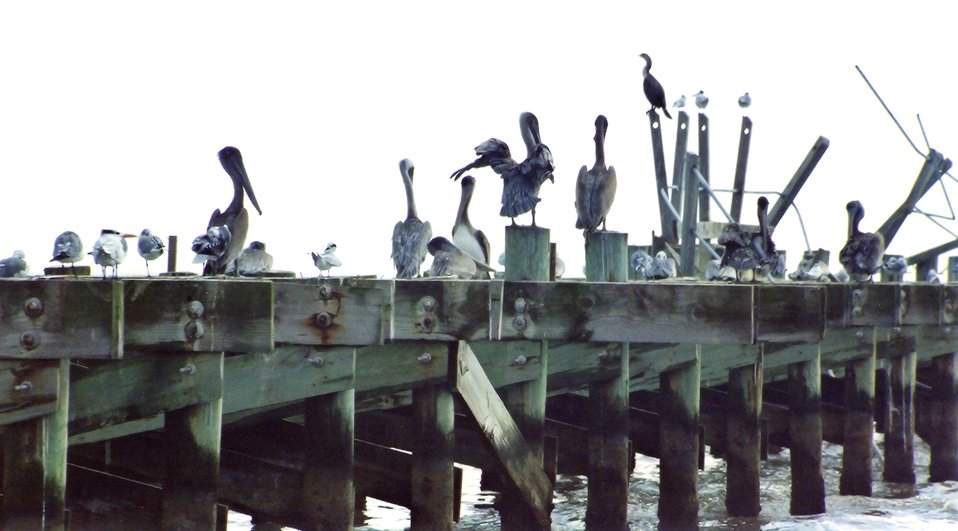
Seagulls, pelicans, oystercatchers, and cormorants use a hurricane- damaged Gulf of Mexico pier as a resting place.